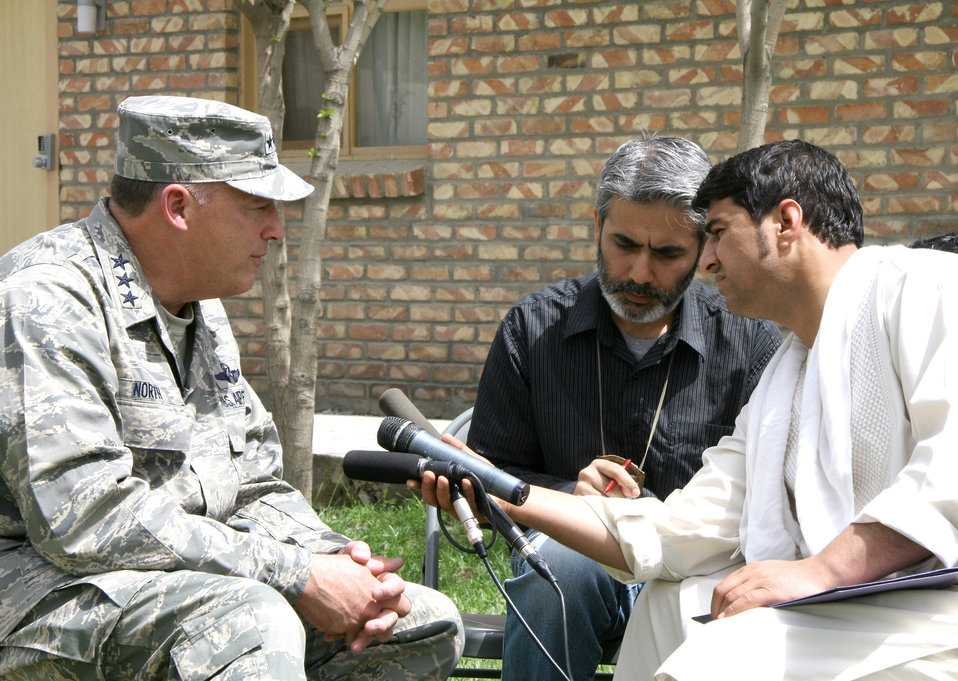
Bagram Media Days

Lt. Gen. Gary North, Combined Forces Air Component commander for Southwest Asia, meets individually with Afghan media following his news conference during